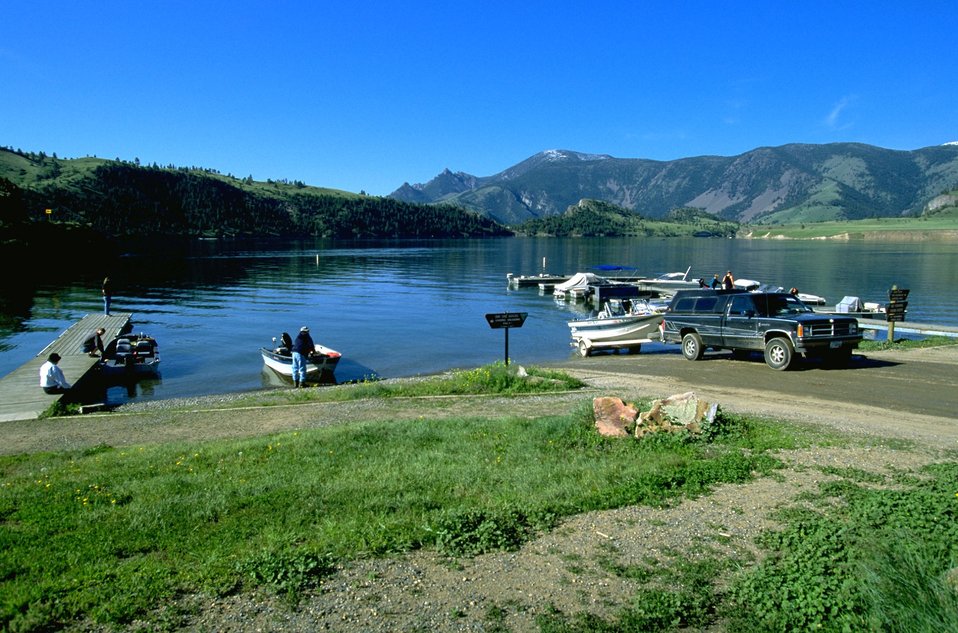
Marina at Log Gulch Campground